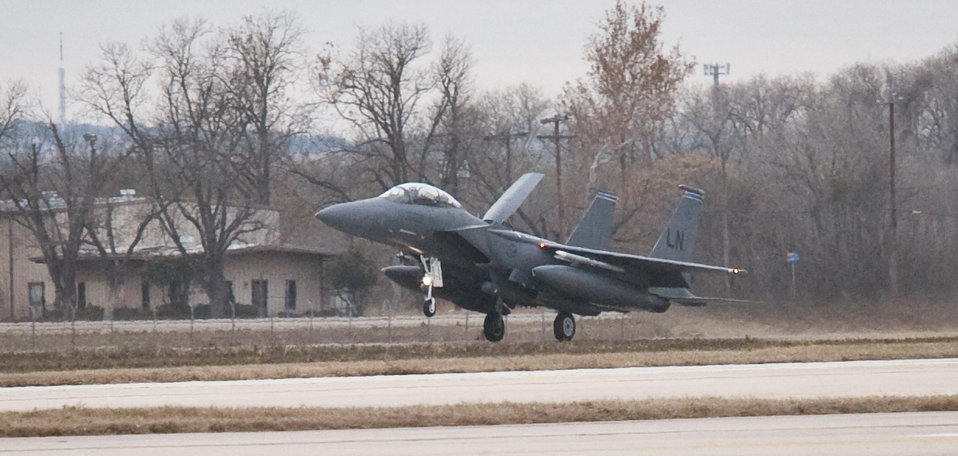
F-15E pilot strikes 4,000 hours

Lt. Col. David Iverson and Capt. Tim Tendall bring the nose wheel of an F-15E Strike Eagle down on Lackland Air Force Base, Texas, Jan. 11, 2010. The 10-hour nonstop flight from Royal Air Force Lakenheath, England, included Colonel Iverson's passage through 4,000 flight hours in the F-15E. The transatlantic flight was supported by seven in-flight refuelings. Both Airmen are with the 492nd Fighter Squadron.